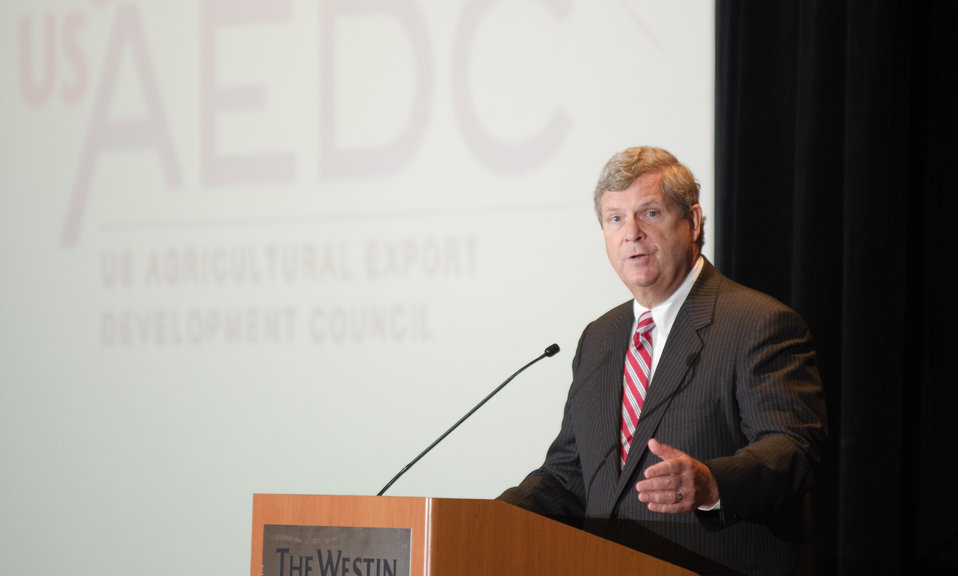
Agriculture Secretary Tom Vilsack presents keynote remarks at the U.S. Agricultural Export Development Council (USAEDC) Attaché Seminar, at the Westin Alexandria, in Alexandria, VA, on Wednesday, July 10, 2013. USAEDC is a non-profit private sector trade association that provides an exchange and coordination of information to promote the export of the products of U.S. agriculture. Their membership includes U.S. commodity trade associations, farmer cooperatives and state regional trade groups from around the country. In the interest of U.S. agricultural growers and producers their export promotion efforts, work in conjunction with the U.S. Department of Agriculture Foreign Agricultural Service.